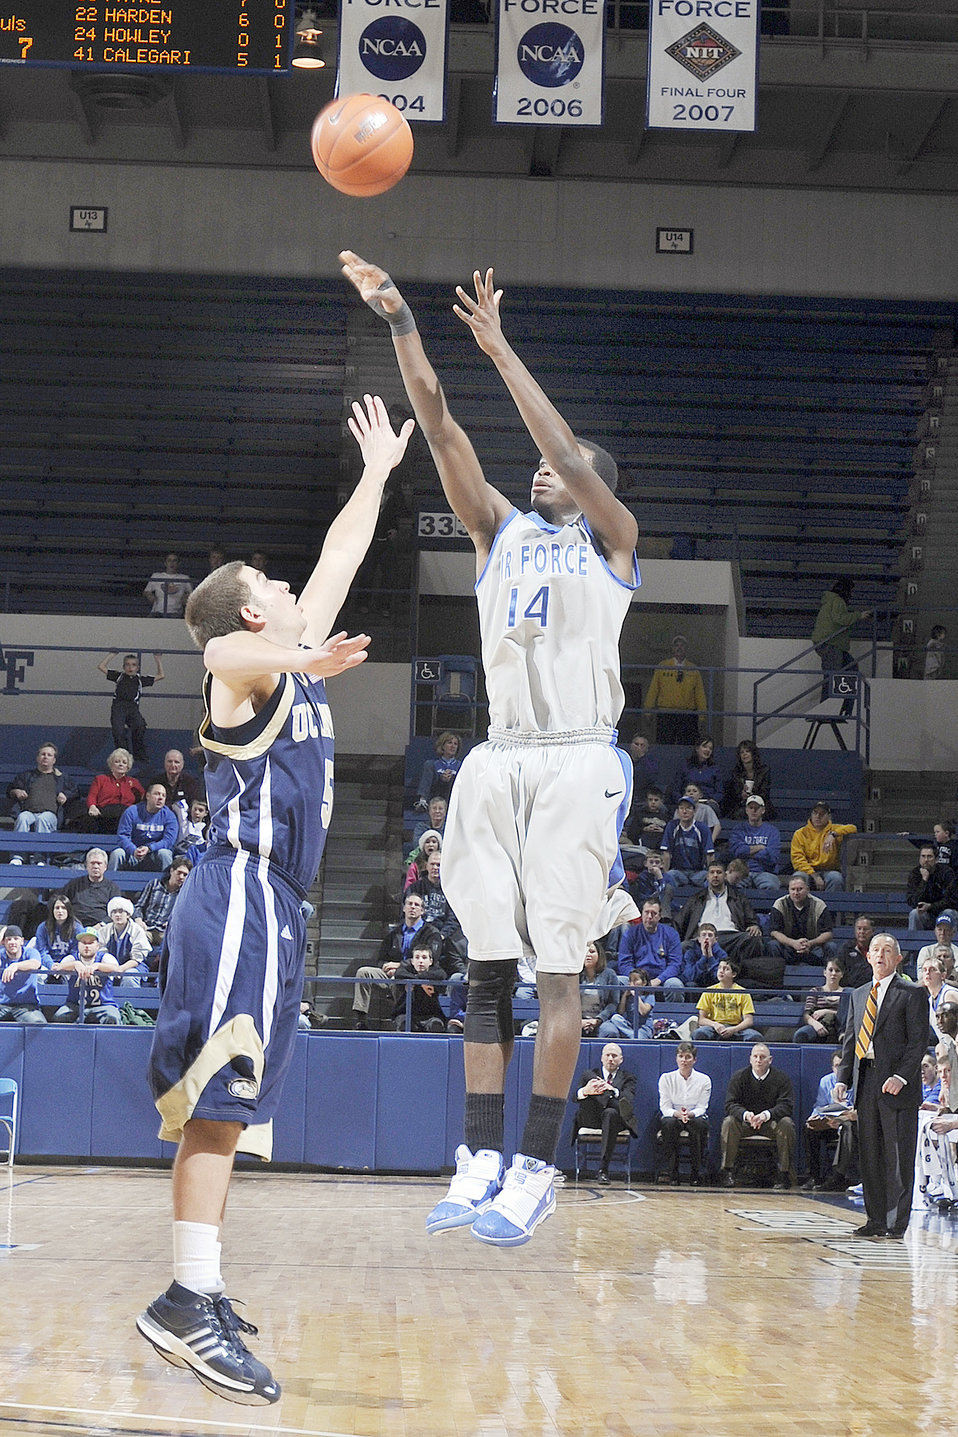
Falcons Defeat UC Davis Aggies

Freshman guard Michael Lyons shoots over Aggie Ryan Silva for 2 of his 7 points as the Air Force Falcons rally to defeat University of California-Davis 69-57 Dec. 22, 2009, at the U.S. Air Force Academy, Colo. Lyons also grabbed 4 rebounds and dished out 4 assists during the contest.